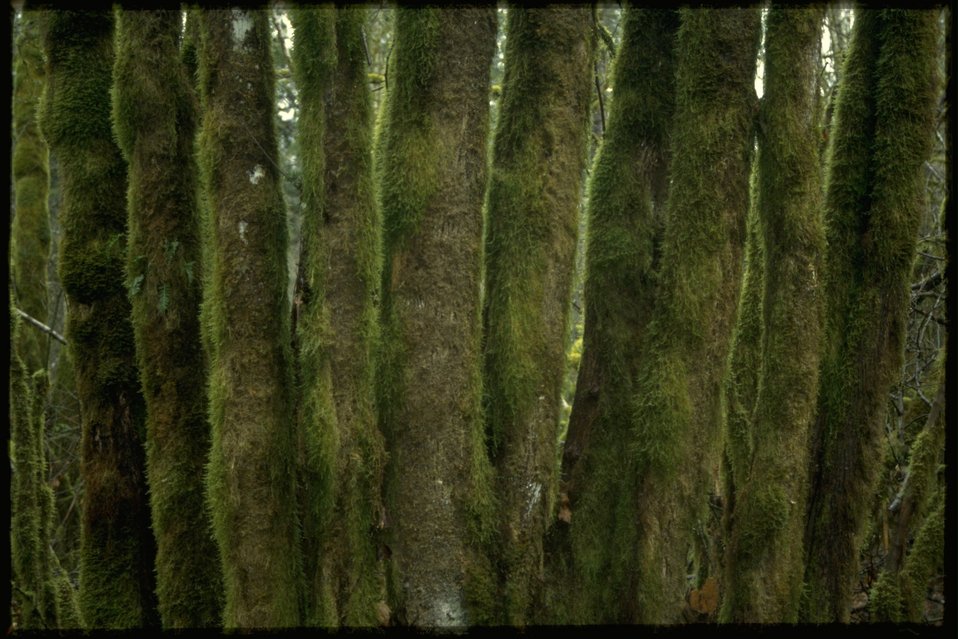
Mossy big leafe maple trunks.